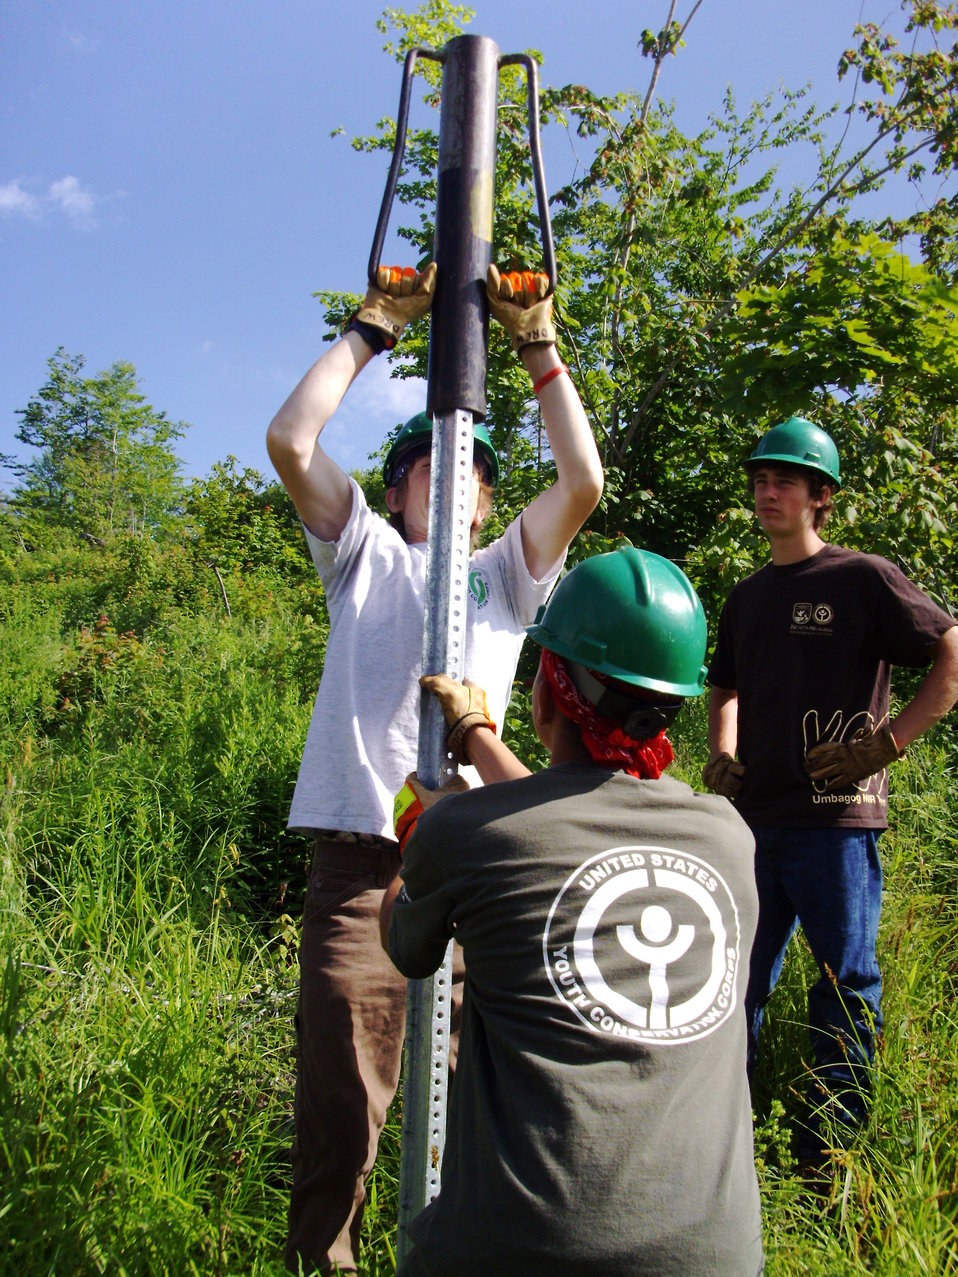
Boundary posting

The YCC crew at Umbagog National Wildlife Refuge posts signs along the refuge boundary.